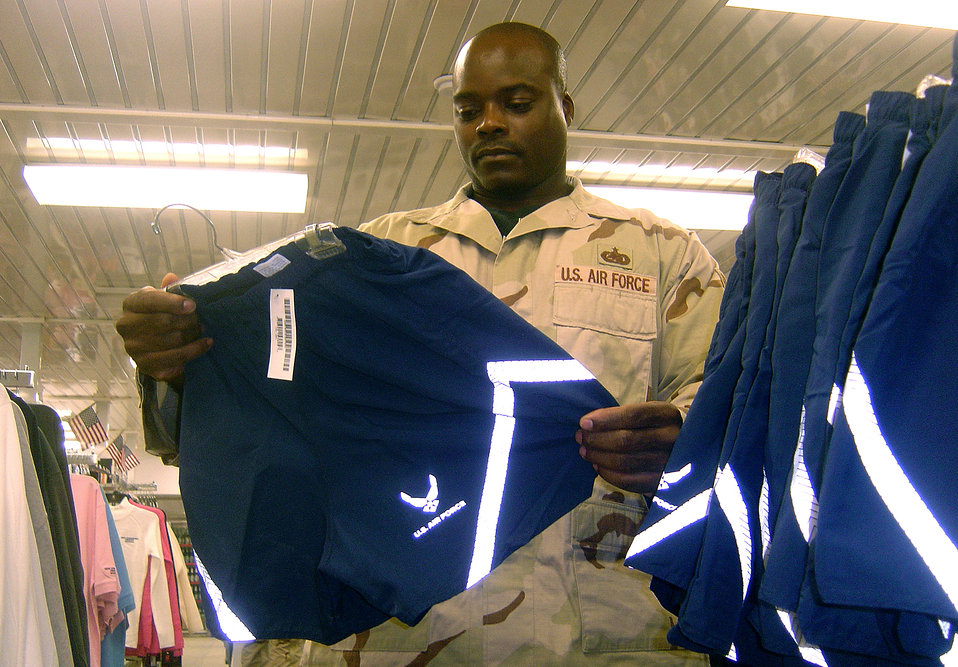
PT spree

KARSHI-KHANABAD AIR BASE, Uzbekistan -- Tech. Sgt. Marcus Nelson checks out the new Air Force physical training uniform at the base exchange here. The base was the first location in